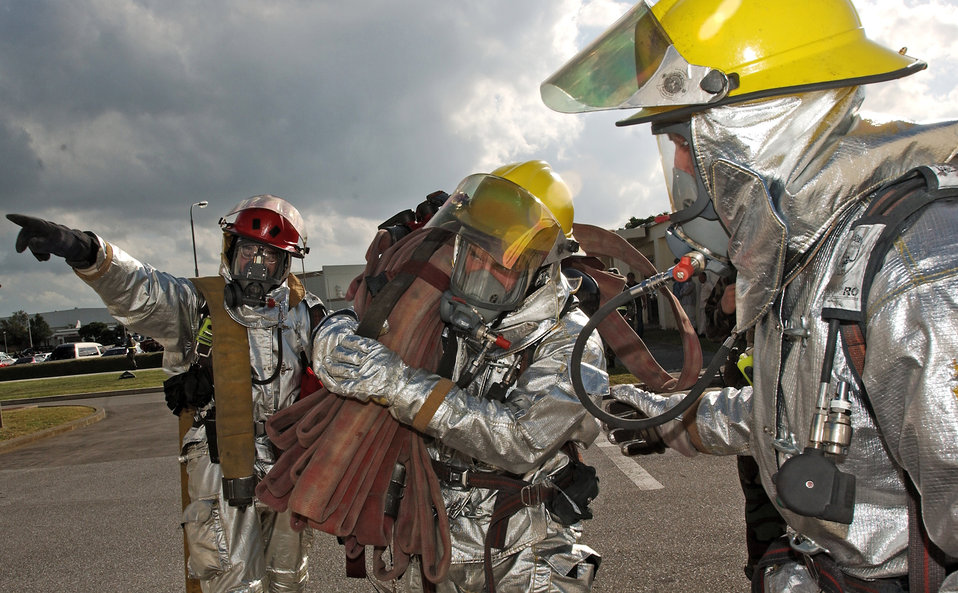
Lifesaving training

Members of the fire department at Kadena Air Base, Japan, respond to a simulated explosion Oct. 24. The mass casualty scenario helped Airmen train on treating wounds and applying basic life-saving steps during the Local Operational Readiness Exercise Beverly High 08-1.